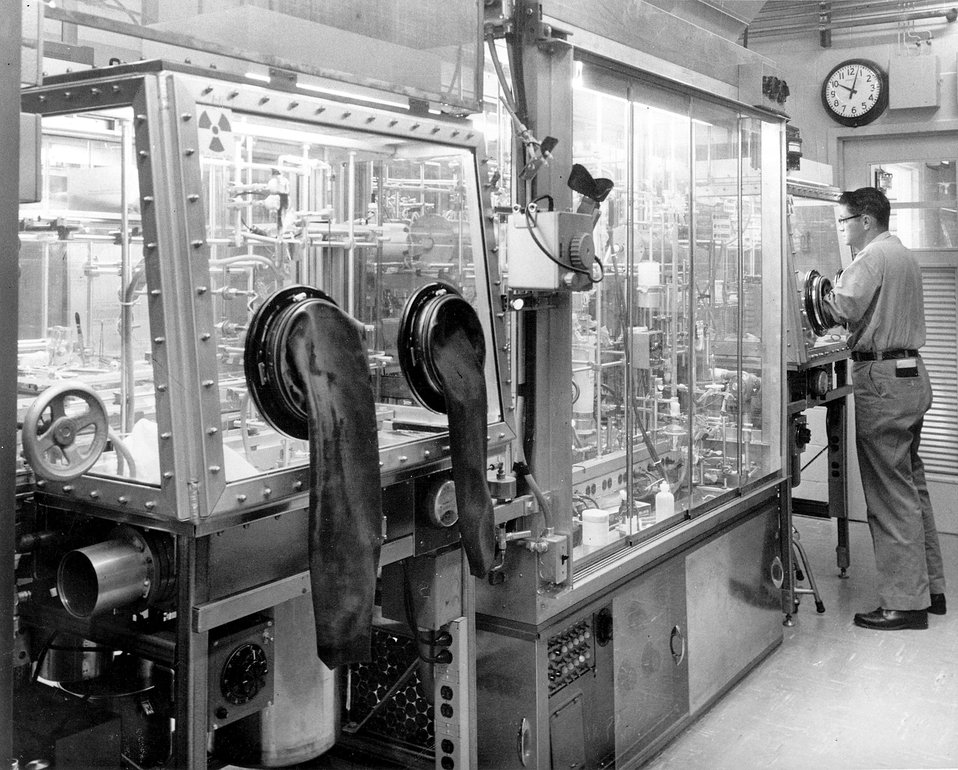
View of the gas analysis section of a plutonium analysis laboratory operated by Chemistry Division of Argonne Lab
c.1965